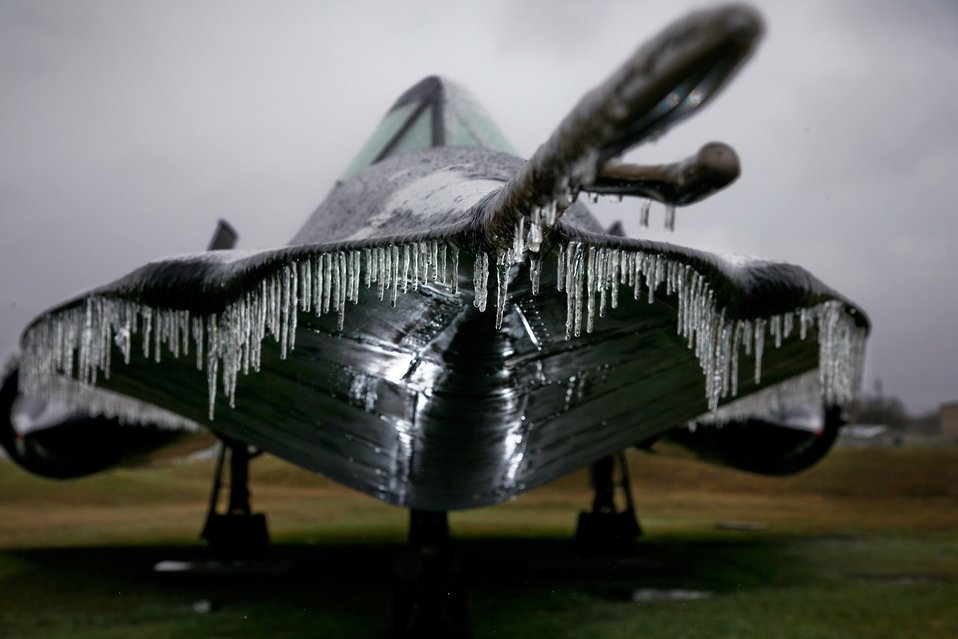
Frozen Blackbird

Freezing rain encased the upper half of an SR-71 Blackbird and formed icicles along the leading and trailing edge of the static display aircraft Jan. 16 at Lackland Air Force Base, Texas.